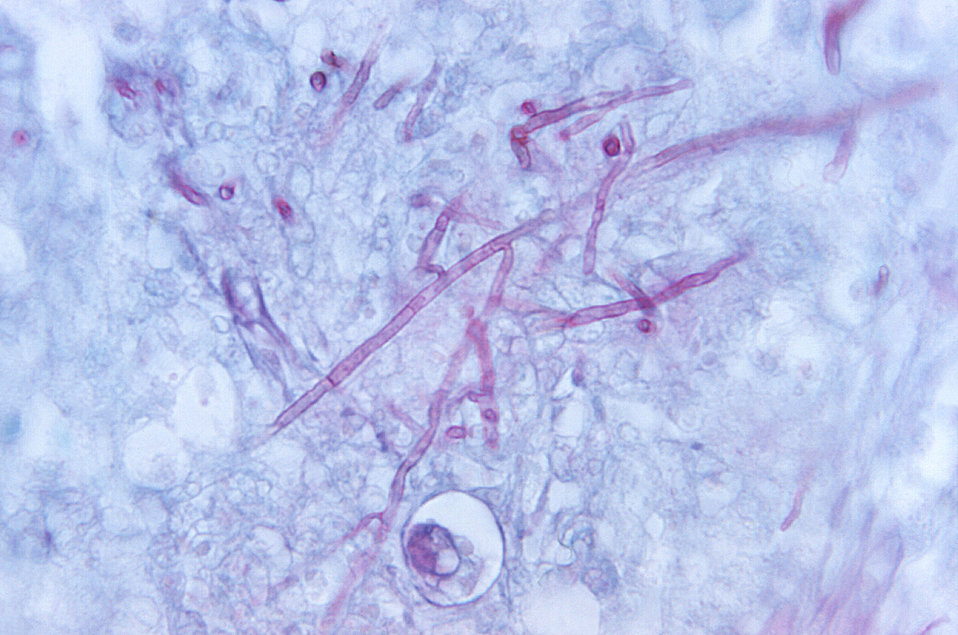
Magnified 680X, this PAS-stained photomicrograph depicted some of the cytoarchectural details observed in a chicken brain tissue sample due to what was determined to be a case of dactylariosis.